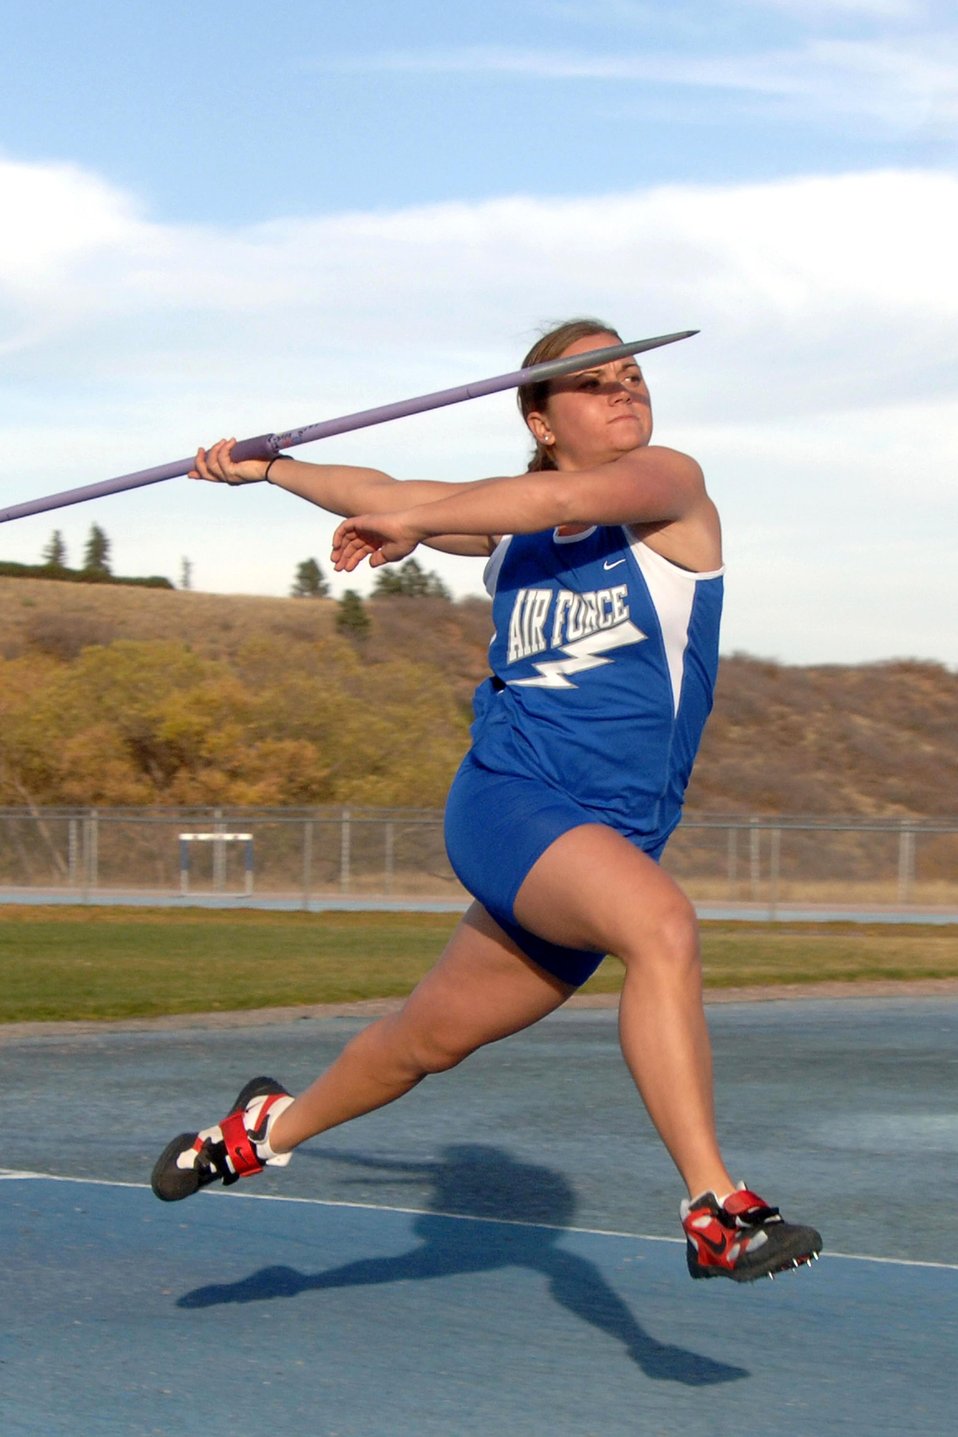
Falcons sweep conference weekly awards

Cadet 1st Class Dana Pounds is the Mountain West Conference Women's Outdoor Track and Field Athlete of the Week. She won the third weekly conference honor of her career after throwing a javelin 186' 10